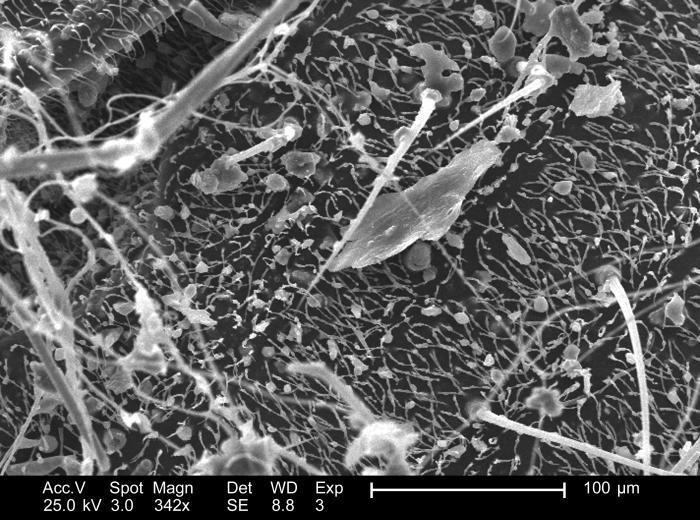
At a magnification of 342x, this 2005 scanning electron micrograph (SEM) depicted the forest of sensorial hairs, or 'setae', covering the surface of a dragonfly's chitinous exoskeleton. Amongst the setae were unidentified particulates that had been picked up from the insect's surroundings. These hairs are sensitive to changes in the organism's environment including changes in temperature, wind speed and direction, and act as mechanoreceptors, picking up on changes to the physical make-up of its surroundings, i.e., tactile interaction. Therefore, these setae, along with the insect's antennae, eyes, and wings offer the organism a detailed comprehensive depiction of its immediate environment by providing the insect with measurable changes in temperature, chemistry, and touch.